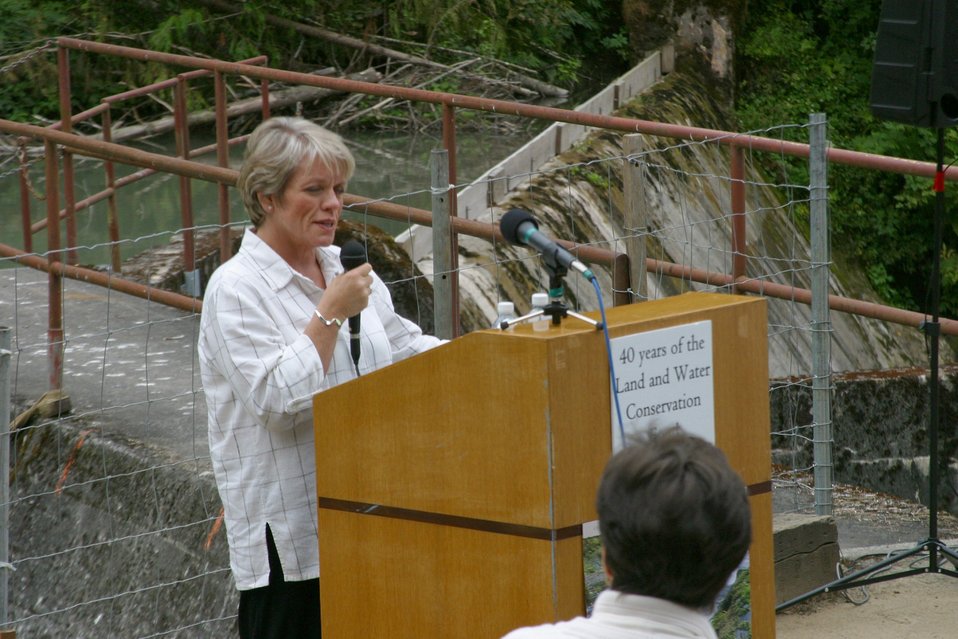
Kathleen Clarke, BLM Director, presents the Four C's Award at the Little Sandy Dam to PGE and the Western River Conservancy.